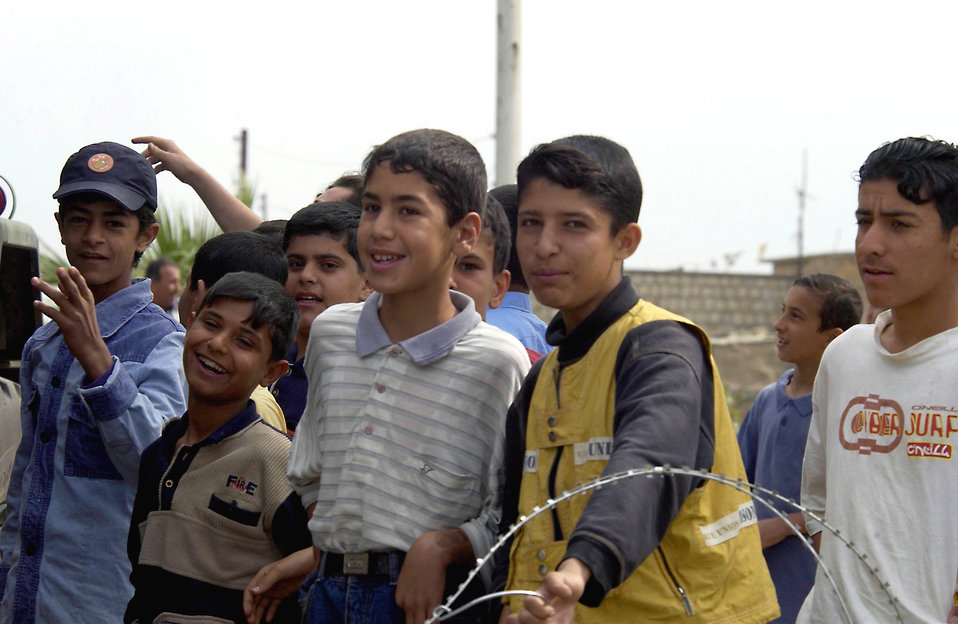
Trip changes airman's view of Iraq

OPERATION IRAQI FREEDOM -- Driving through Kirkus, Iraq, Tech. Sgt. Steve Fausili took this photo of Iraqi boys waving at the passing American convoy. Fausili is a combat cameraman assigned to the 1st Combat Camera Squadron at Charleston Air Force Base, S.C.